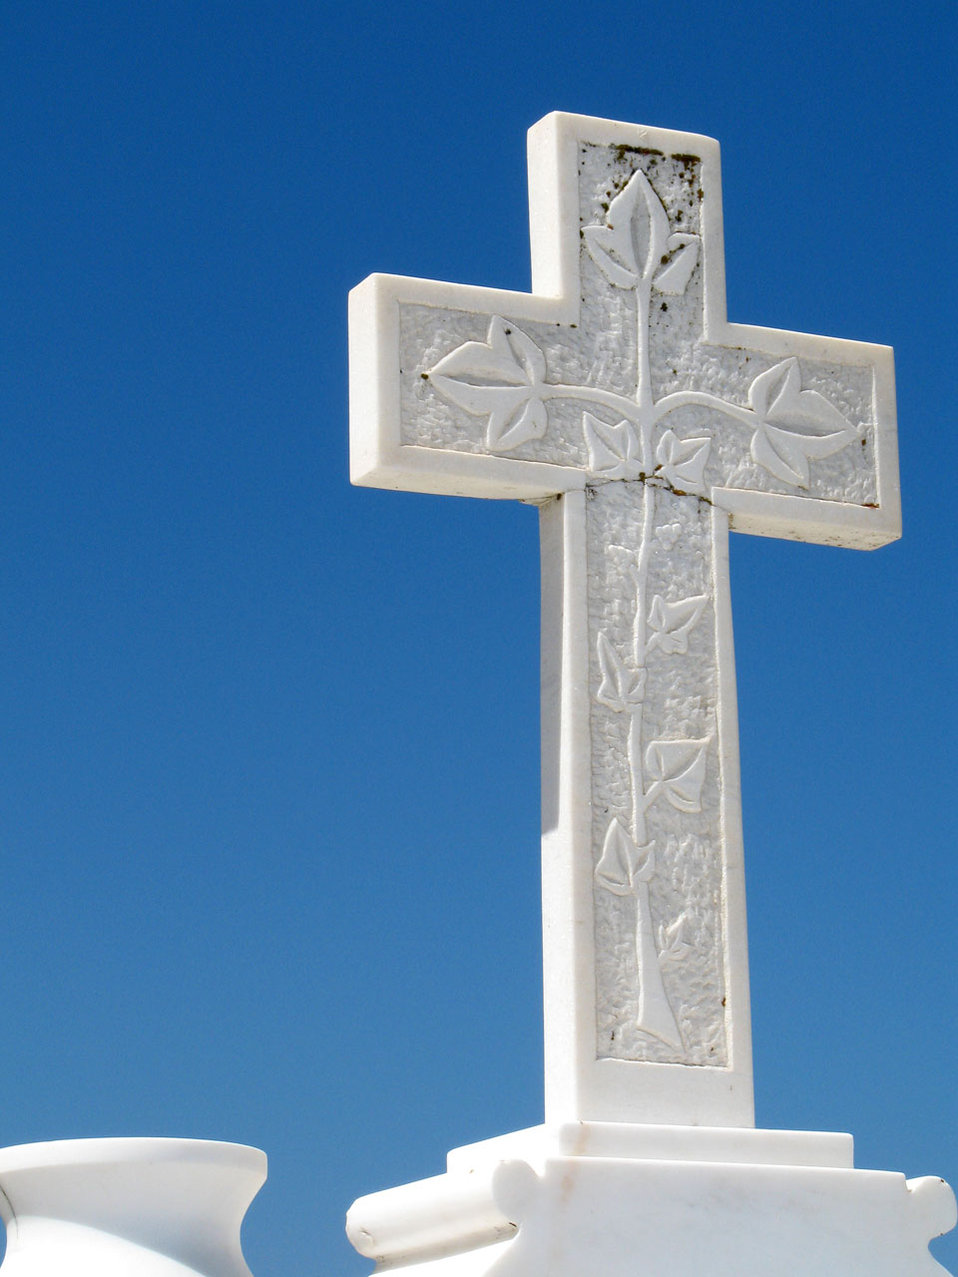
Cross

White cross against blue sky.